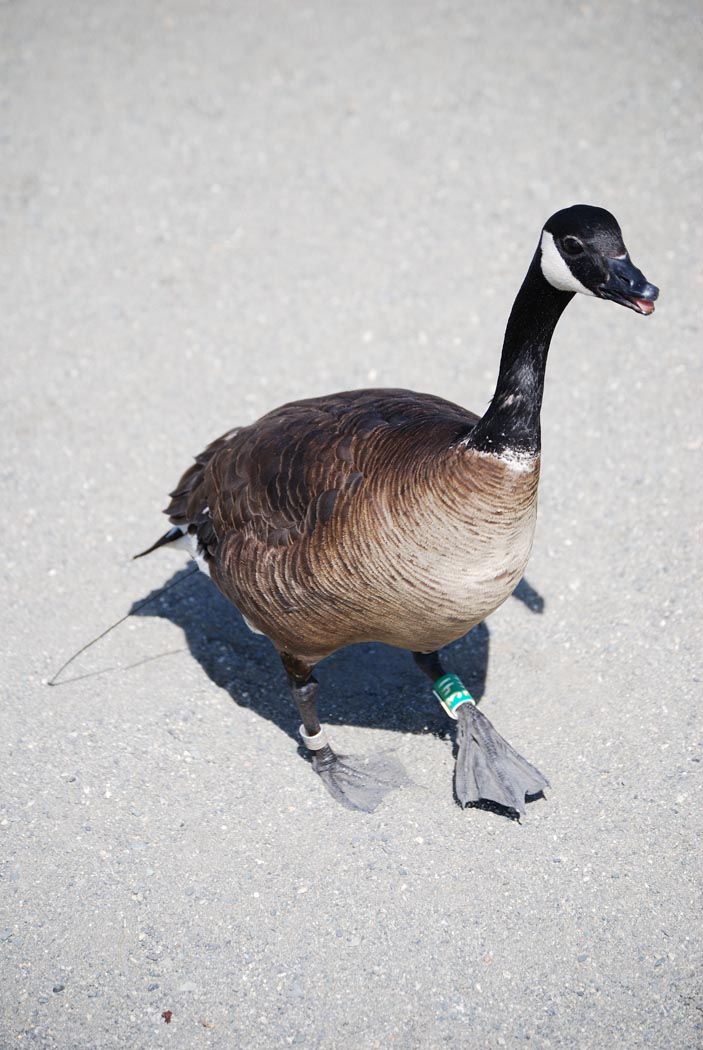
Canada goose at Goose Lake, Anchorage

Close view of Canada goose in Anchorage.